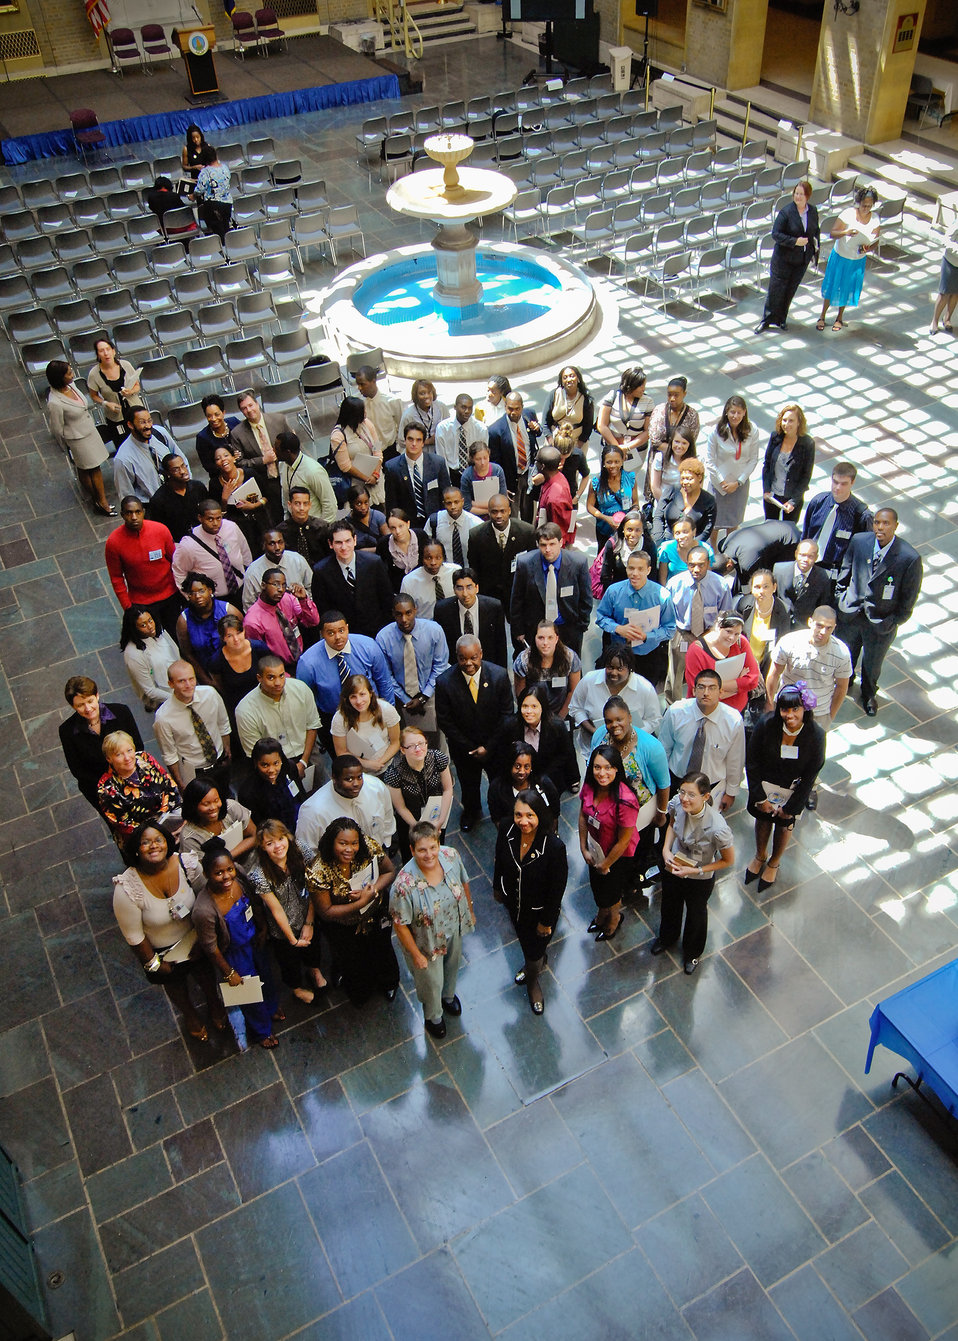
Departmental Management Interns pose for a photograph on the patio of the Department of Agriculture in Washington, DC, on Tuesday, June 8, 2010. USDA Photo 10di1394-21.